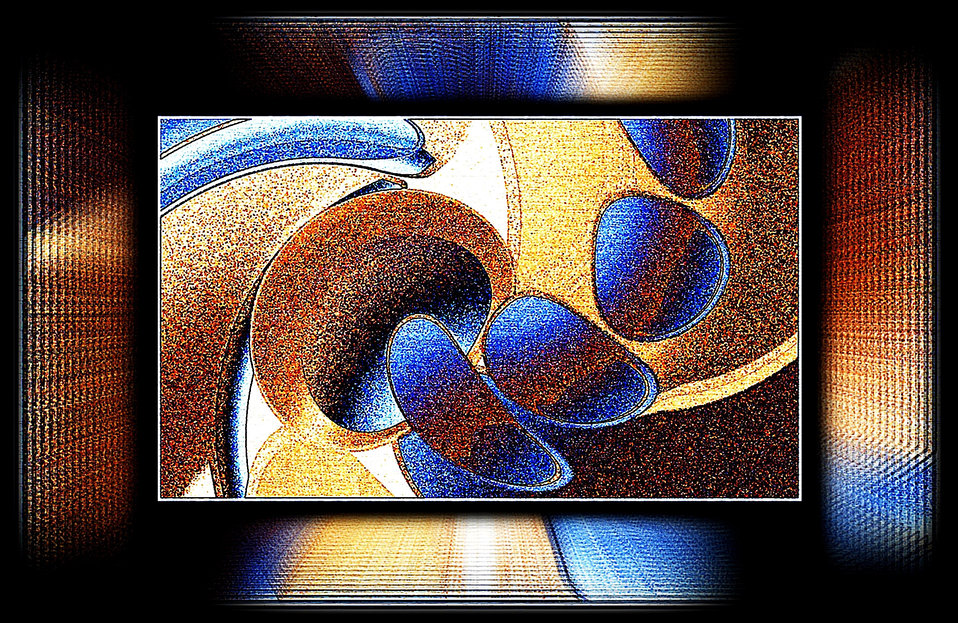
The room

The background room.